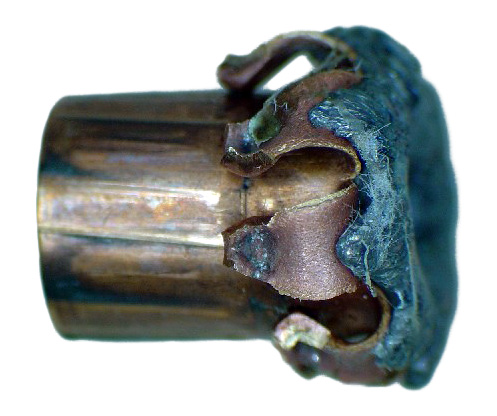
A fired .38 Special hollow-point bullet viewed from the side, showing the intended terminal ballistics sometimes referred to as mushrooming.